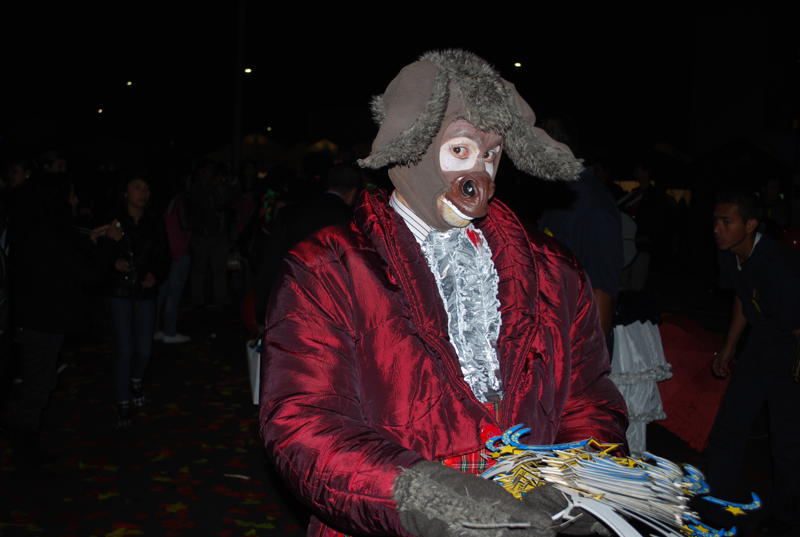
Actors from the Andrés Carne de Res Restaurant Join the CelebrationsActors from the Andrés Carne de Res Restaurant Join the Celebrations

Actors from the Andrés Carne de Res restaurant join the celebrations at the U.S. Independence Day “State Fair” Community Event at the U.S. Embassy Bogotá in Colombia, on July 2, 2010.